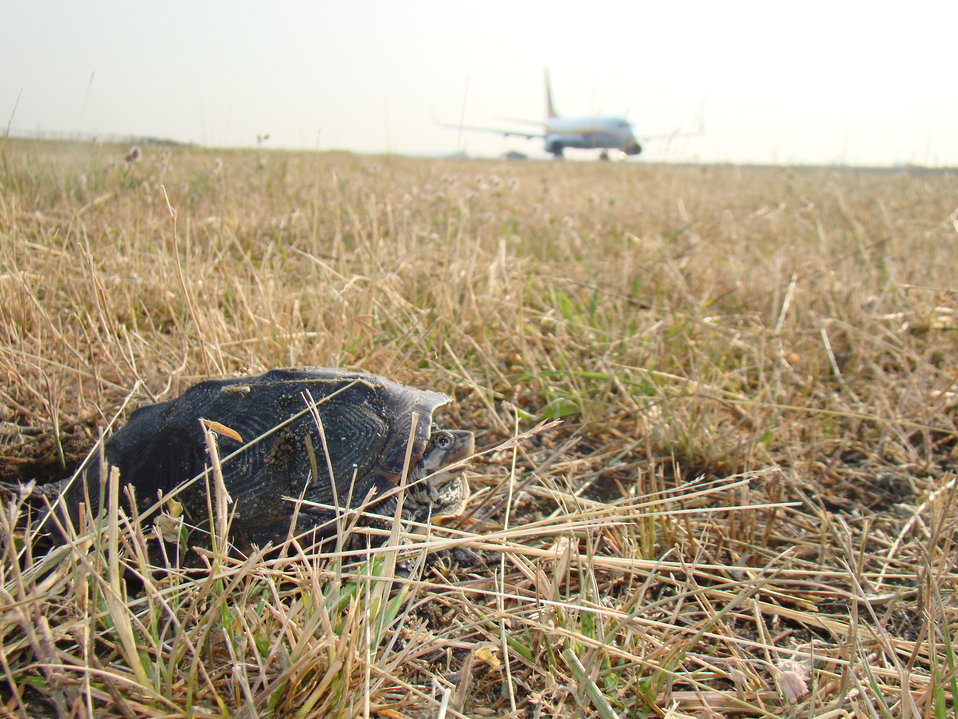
An adult Diamondback terrapin is too close to the runway at John F. Kennedy (JFK) International Airport, New York on May 23, 2012. U.S. Department of Agriculture (USDA) Animal and Plant Health Inspection Service (APHIS) Wildlife Services’ biologist Jenny Mastantuono and her staff work at John F. Kennedy (JFK) International Airport solving wildlife conflicts with people and planes. The Diamondback terrapin is a type of turtle that prefers to live in brackish marshes and the Jamaica Bay Wildlife Refuge around JFK is a favored habitat for these reptiles. In the late spring, they crawl on to land to lay their eggs in the sandy soils near the airport, often crossing runways to do so. Terrapins on the runway pose a threat to aircraft using the runways. If a plane hits the terrapins, their carcass can attract scavengers like gulls, which may pose an even greater danger to airline safety.